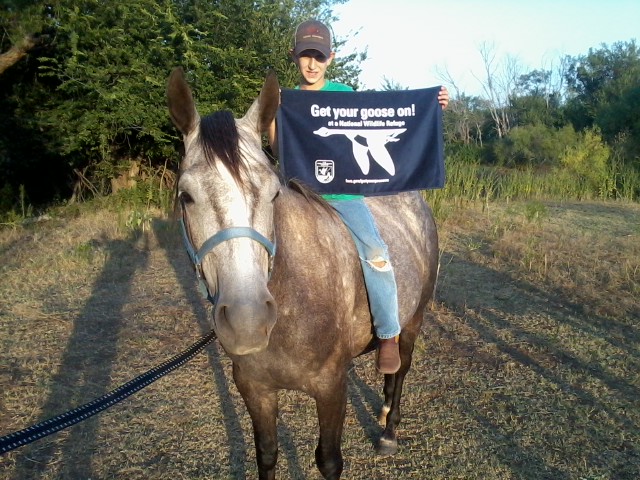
Get Your Goose On!

Wichita Mountains National Wildlife Refuge in Oklahoma.